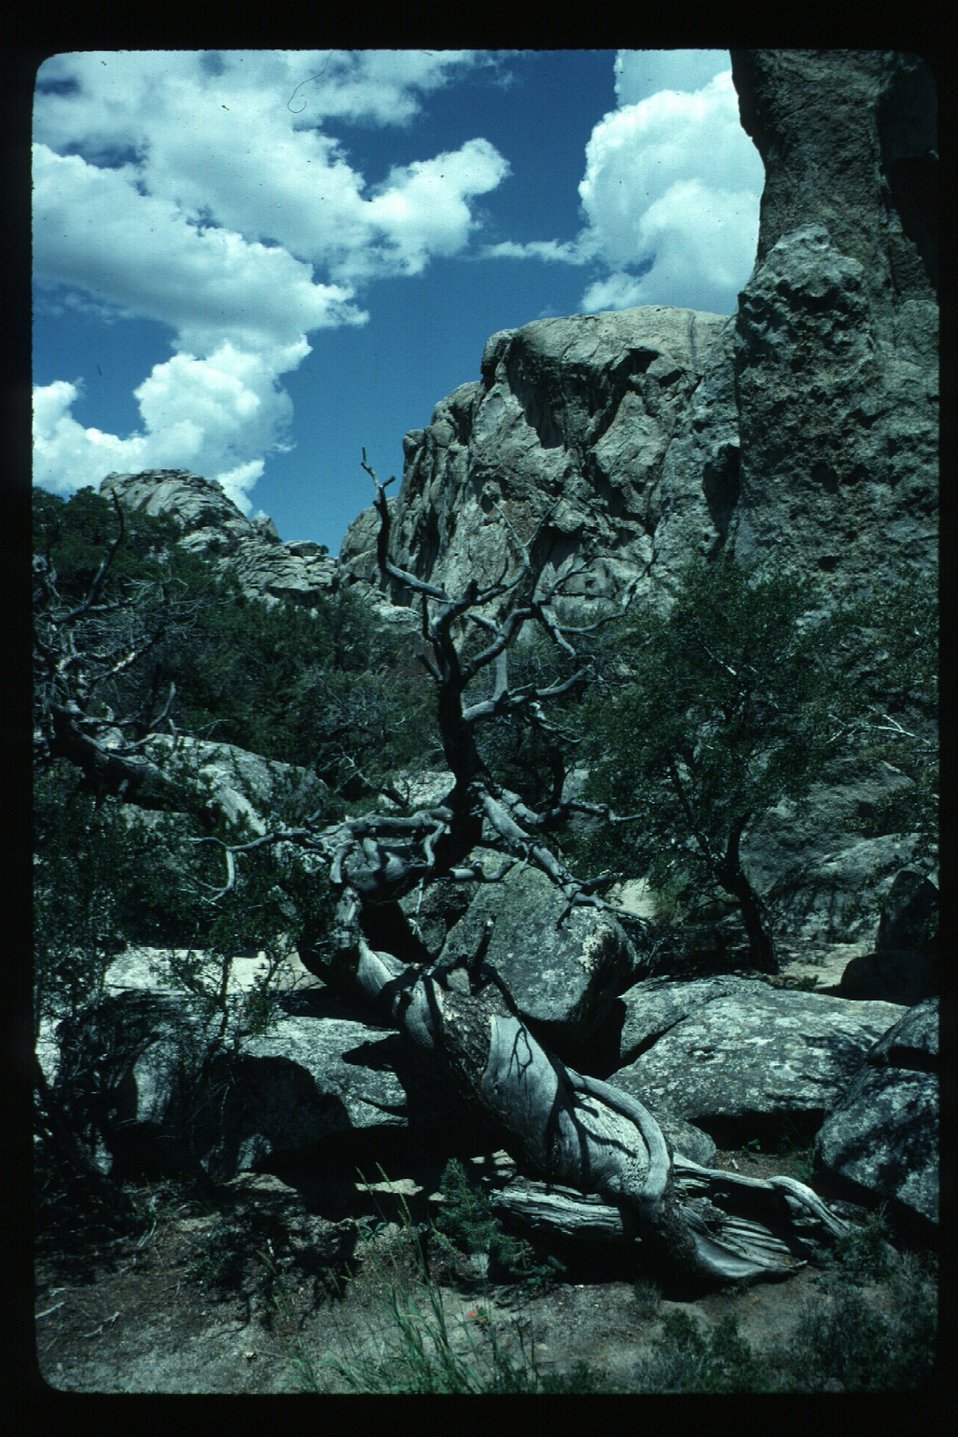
Rock climbing Burley City of Rocks Burley Field Office USRD Upper Snake River District